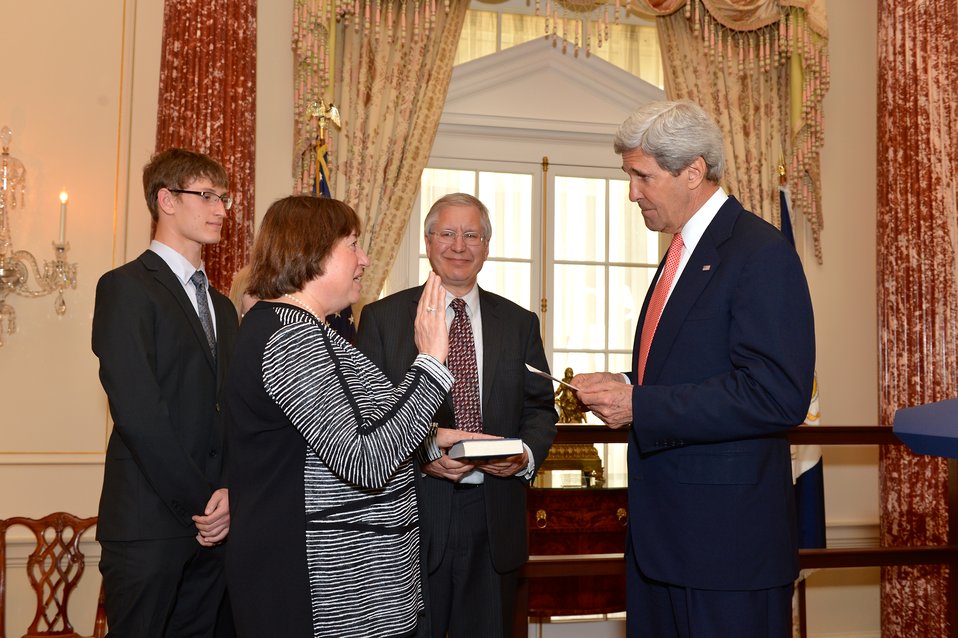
Secretary Kerry Swears in Under Secretary Novelli

U.S. Secretary of State John Kerry swears in Catherine Novelli as Under Secretary for Economic Growth, Energy, and the Environment at the U.S. Department of State in Washington, D.C., on April 22, 2014.